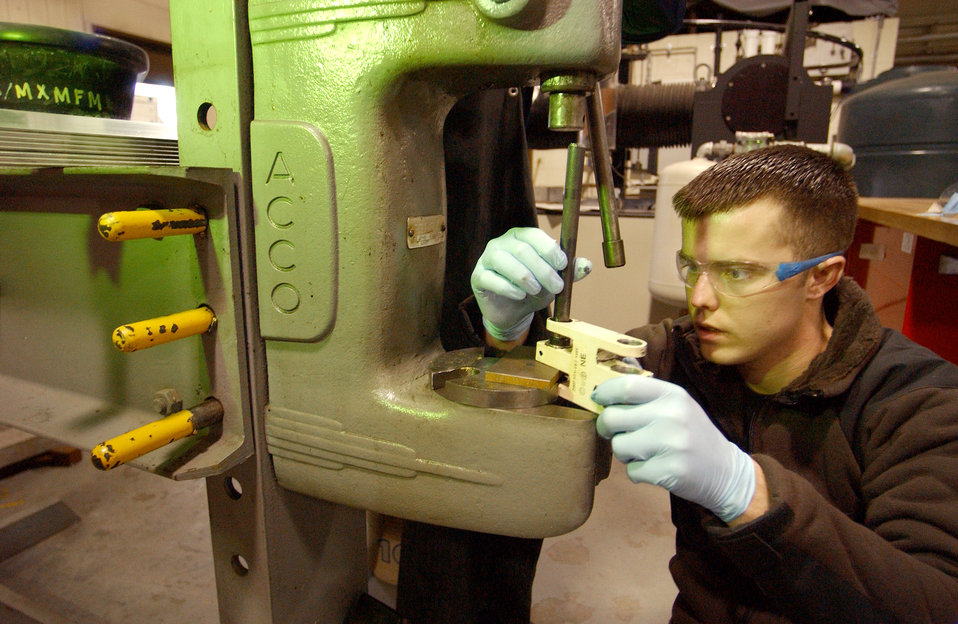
Fabrication troops

KUNSAN AIR BASE, South Korea -- Airman 1st Class Joel Francisco uses a hydraulic press to insert a bushing into a drag brace assembly here Dec. 1. Airman Francisco is assigned to the 8th Maintenance Squadron.